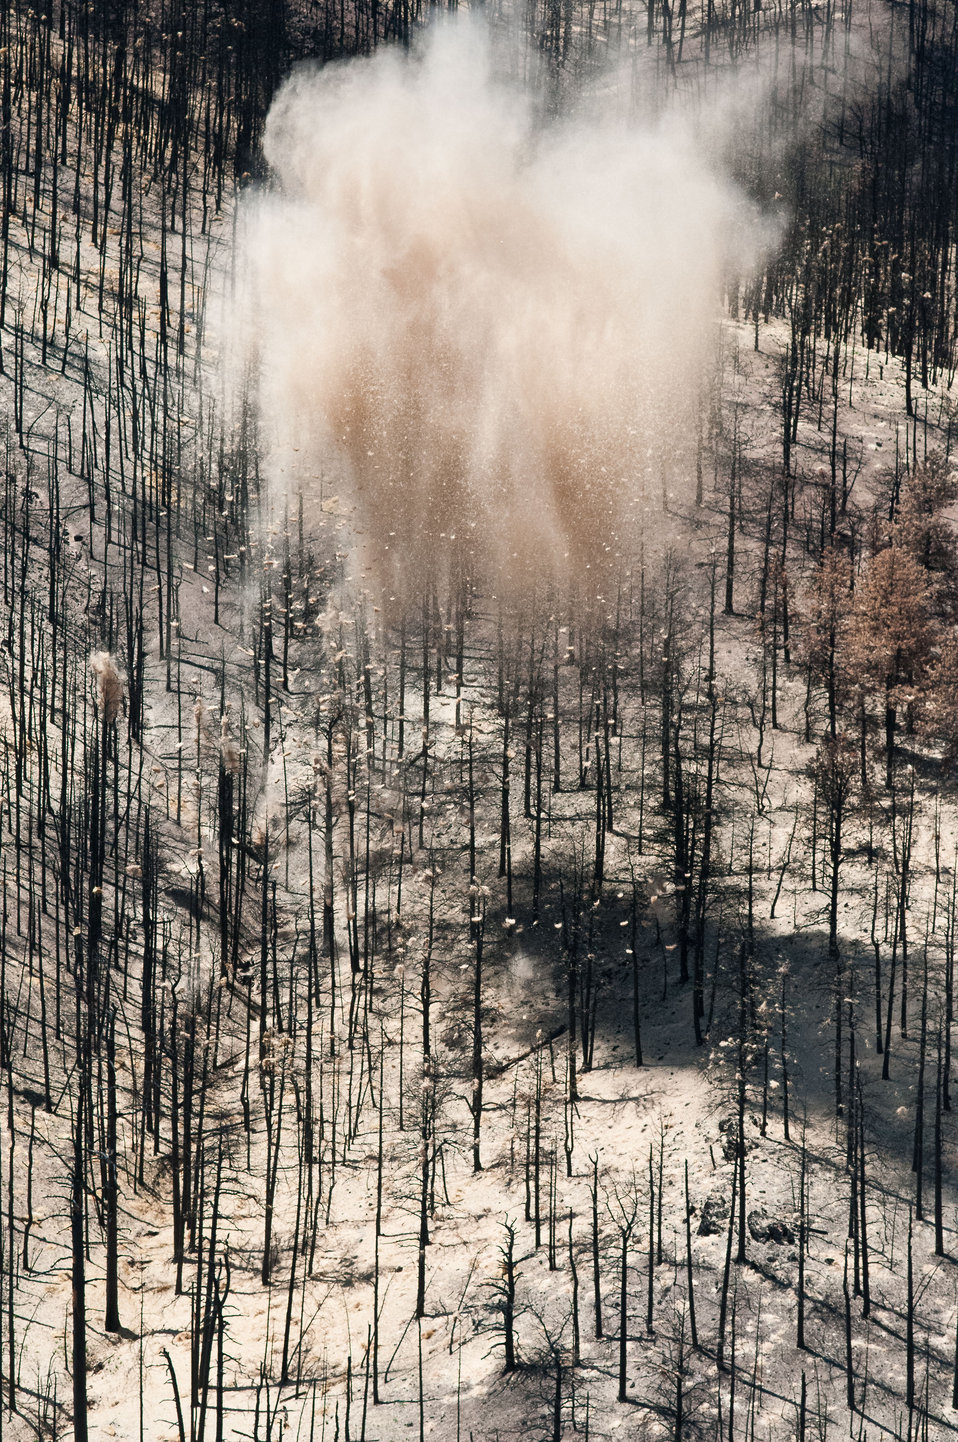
A ton of straw slowly falls during an aerial disbursement over a burned out area of the Poudre Canyon mountainside, on Friday, July 20, 2012, near Fort Collins, Colorado. This is an aerial application of straw that will mitigate soil and ash runoff from the mountainous terrain leading to Seaman Reservoir, drinking water resource for the City of Greeley. Forest Service lands receive straw, while private and other lands receive a seed mix and straw to promote ground cover plant growth on ash-covered lands. In total, 1,800 tons of straw will be applied during the 14-day operation. One quarter of the cost was paid by the City of Greeley and the U.S. Department of Agriculture funded the remainder. The Hewlett Gulch Fire was started by a camper’s alcohol stove, on May 14, at the saddle of a picturesque mountain ridge along the Hewlett Gulch Trail of Poudre Canyon, in the Roosevelt National Forest, 60 miles north of Denver. At it’s peak more than 400 firefighters were battling fires being pushed by 50 mph winds that helped blacken over 12-square-miles of dry ground cover, brush and trees. Many of the trees were already dead and tinder dry from beetle-kill. Their efforts have successfully kept water in the reservoir clean and clear, while downstream water flow has gone from famous Colorado clear water to nearly black flows of water heavily laden with ash, silt, and burnt debris that recent thunderstorms have already washed down from the mountainsides.